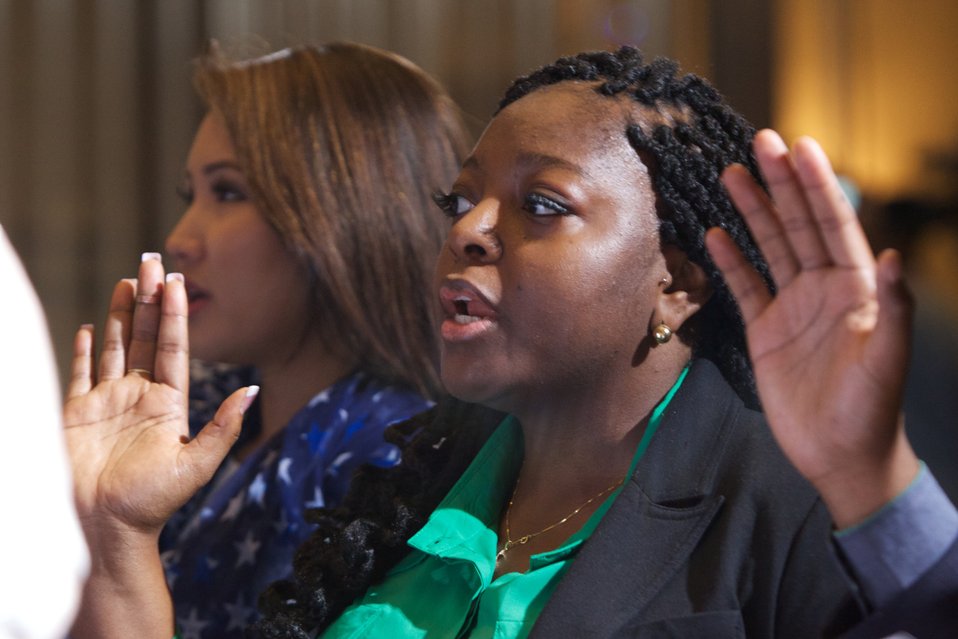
Naturalization Ceremony with Michelle Obama